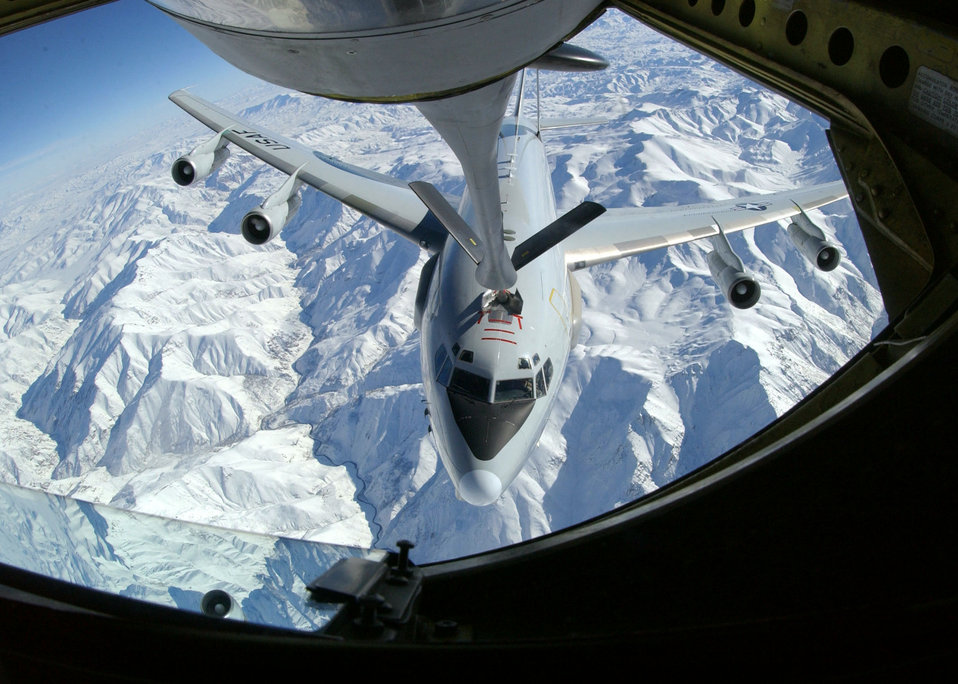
Border patrol

OPERATION NORTHERN WATCH (AFPN) -- An E-3B Sentry Airborne Warning and Control System aircraft refuels along the Iraqi border as part of an Operation Northern Watch mission of enforcing the no-fly zone over northern Iraq. The AWACS is assigned to the 513th Air Control Group at Tinker Air Force Base, Okla.